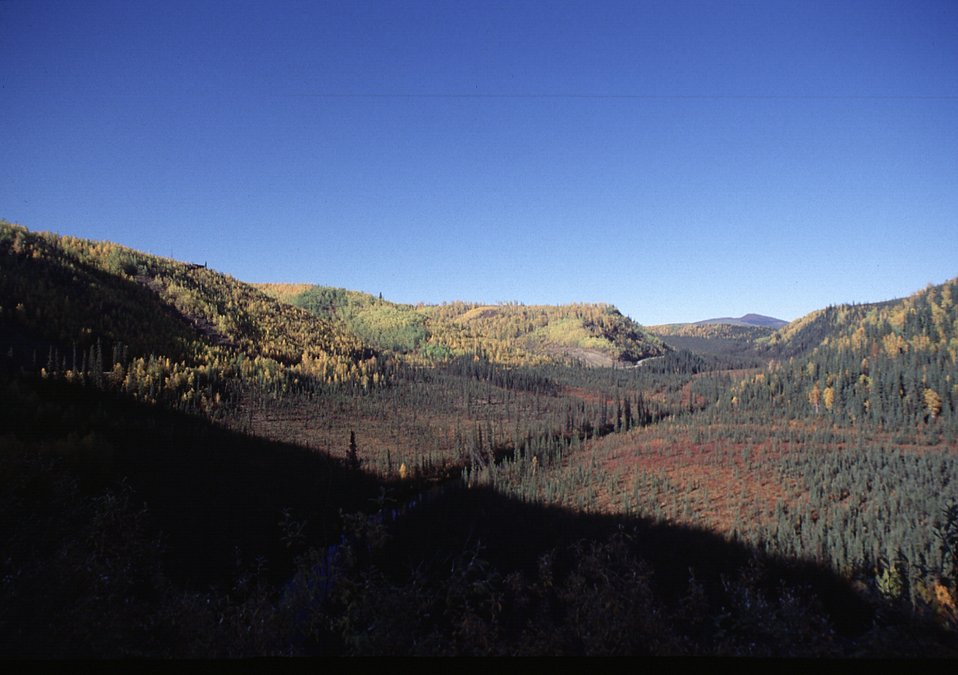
Fall colors along Taylor Highway, Alaska